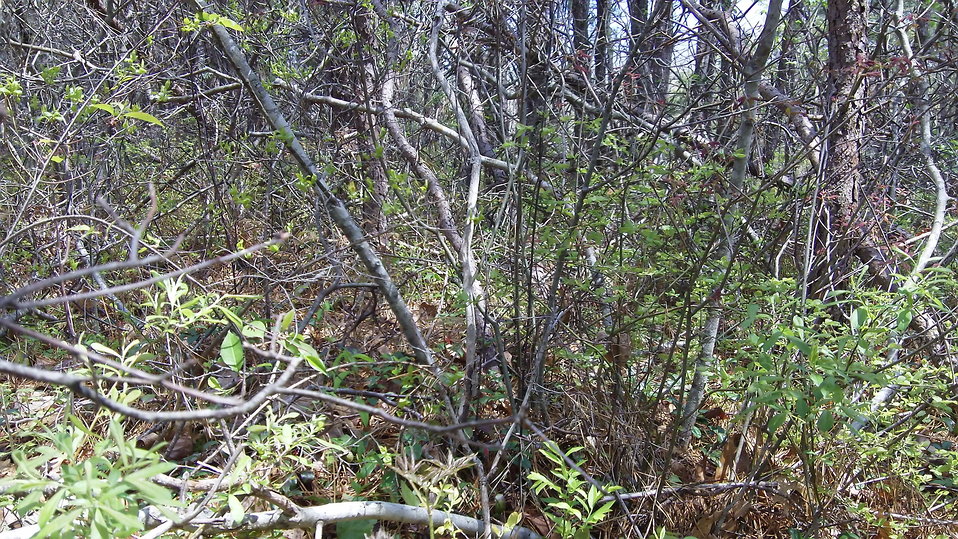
New England cottontail habitat

New England cottontails require homes like young regenerating forests, dense thickets of shrubs, coastal shrublands, and shrubby edges of upland wetlands.